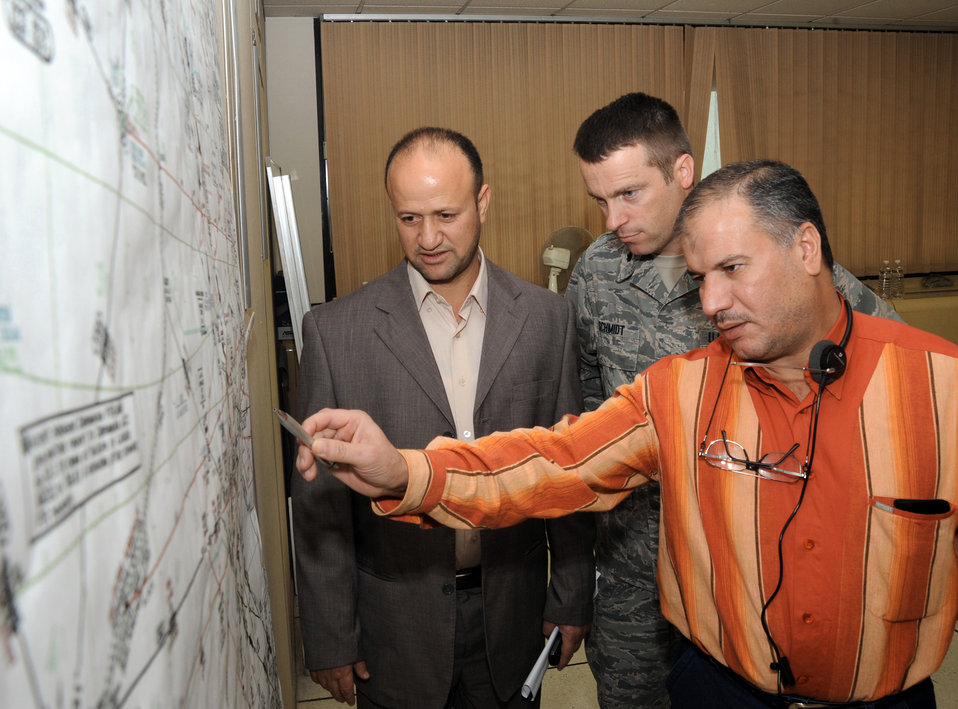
ICAA makes airways appear out of thin air

Lt. Col. Tom Schmidt observes while Iraq Civil Aviation Authority members discuss the new Iraqi airway structure Nov. 18, 2009. Colonel Schmidt spent the past seven months helping the Iraqis develop new air routes. These routes will increase efficiency and capacity through Iraqi airspace, normalizing Iraq's airspace and increasing its air traffic growth. Colonel Schmidt is the Air Component Coordination Element airspace planner.